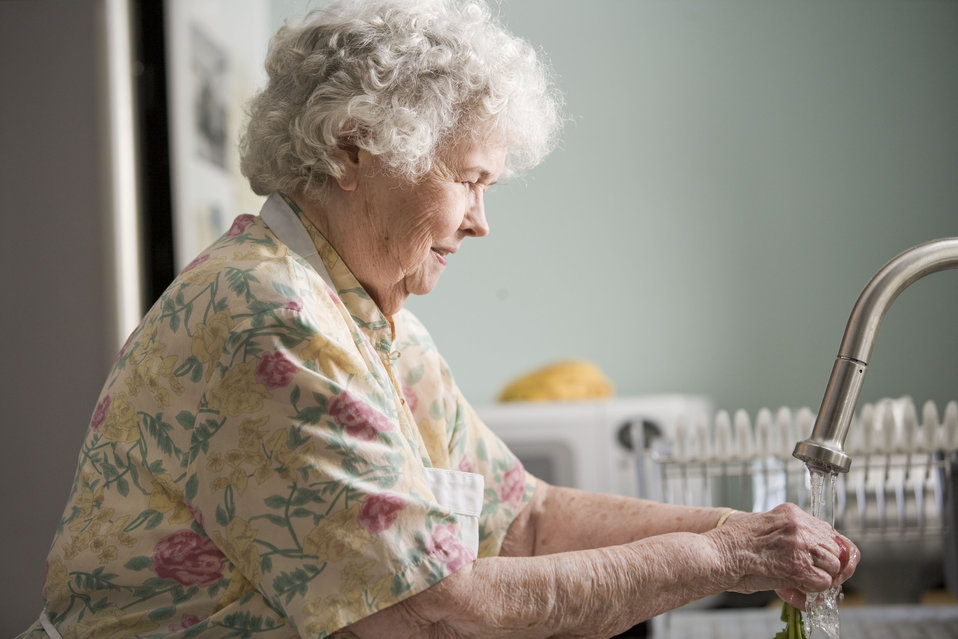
Properly cleaning fresh, uncooked produce is a must when preparing a meal, and with this in mind, the elderly woman pictured here was doing just that, as she was thoroughly cleaning a number of carrots and radishes. Note that there was soil still clinging to the tubers, which would have to be entirely removed using vigorous scrubbing with soapy warm water. Cleaning also will remove environmental pollutants, such pesticides from the foods' surfaces.